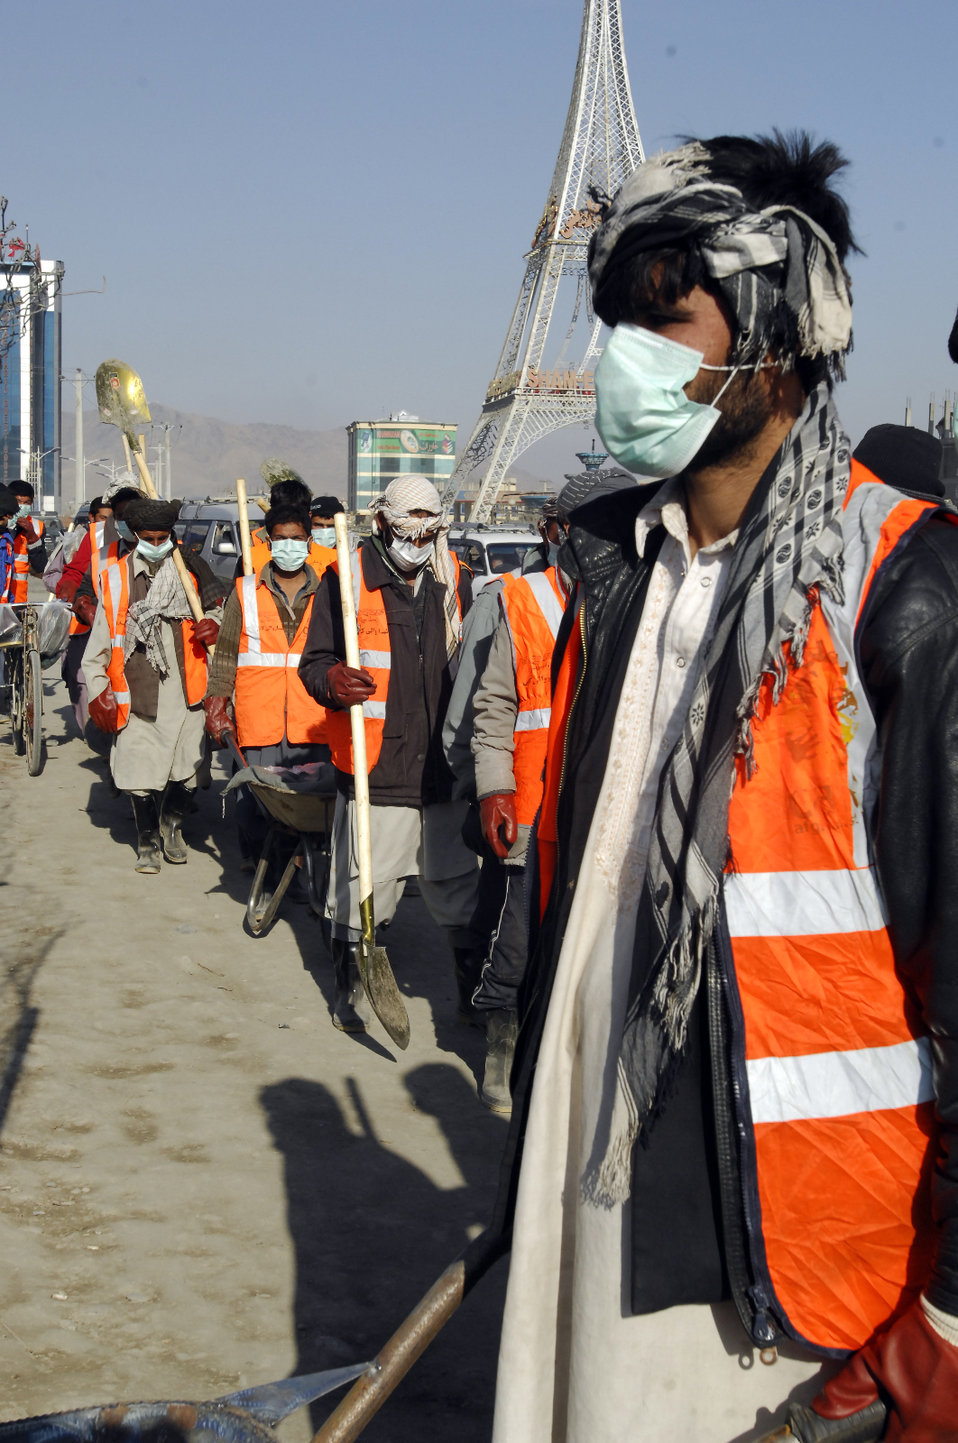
Care69